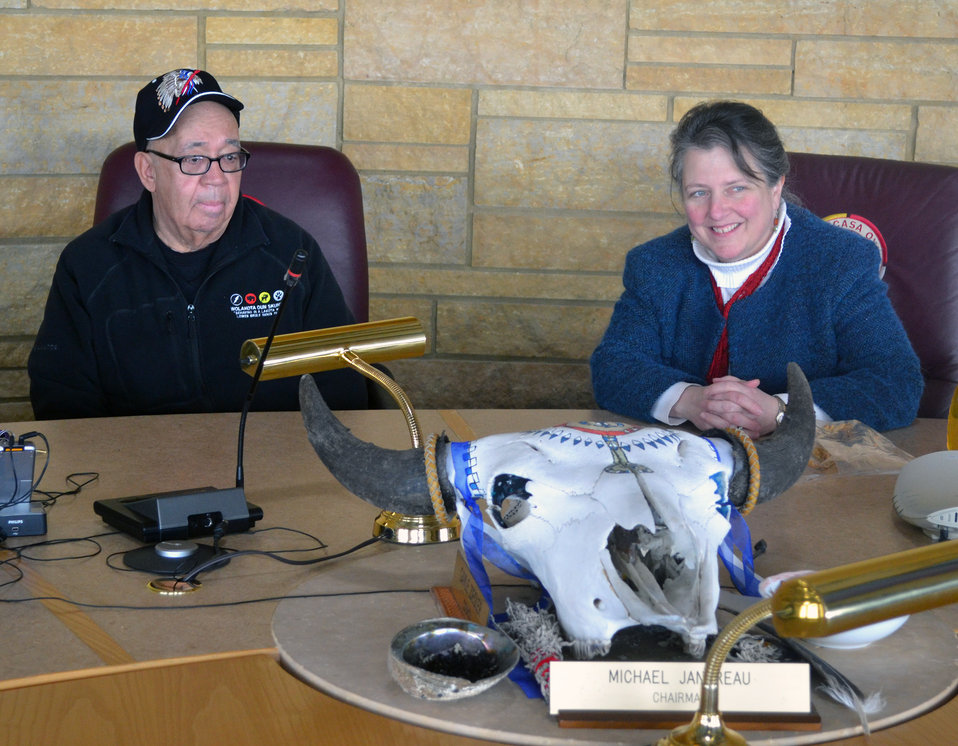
Agriculture Deputy Secretary Kathleen Merrigan hosted two roundtable meetings in Lower Brule, SD on Feb. 28, 2013. Deputy Secretary Merrigan held a press availability with Tribal Chairman, Lower Brule Sioux Tribe, Fort Thompson, S.D. and member of the Council for Native American Farming and Ranching Michael Jandreau to reaffirm the Obama Administration’s commitment to Indian Country and highlight the U.S. Department of Agriculture’s (USDA) efforts to promote business development and job creation in rural South Dakota.